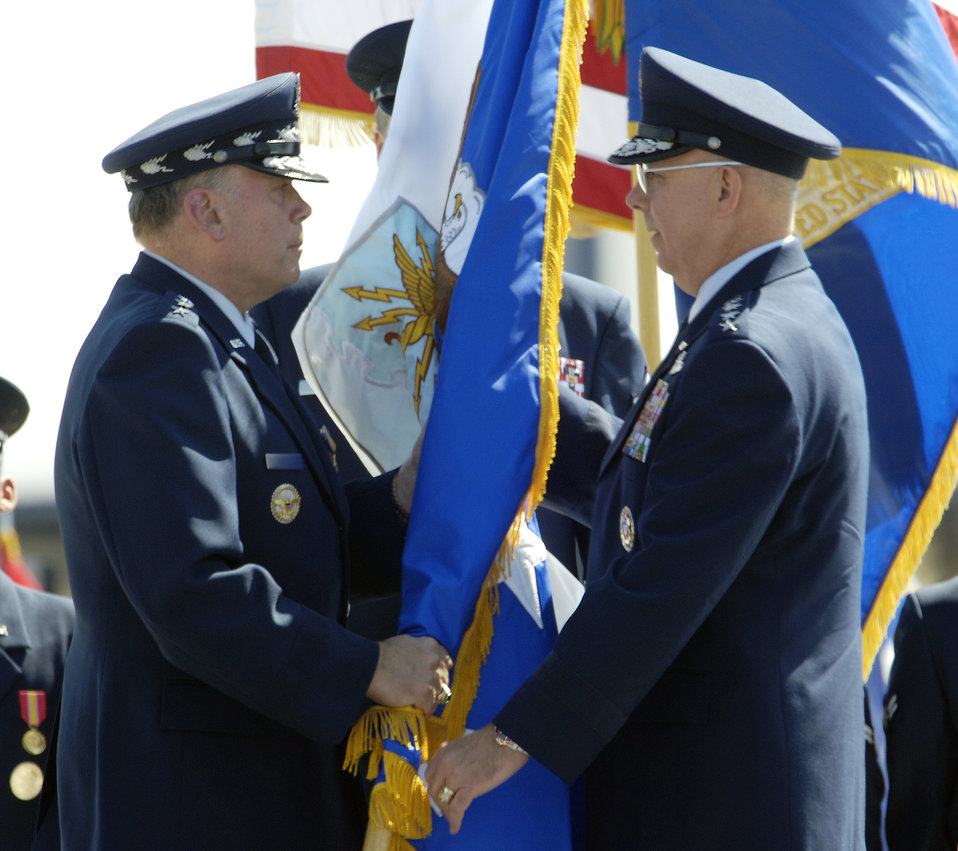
General Moseley swears in as Air Force's 18th chief of staff

ANDREWS AIR FORCE BASE, Md. -- Gen. John P. Jumper (left) passes the Chief of Staff Guidon to Gen. T. Michael Moseley during a ceremony here Sept. 2. General Jumper served in the Air Force for 39 years. General Moseley served as vice chief of staff of the Air Force before being sworn in as the 18th Air Force chief of staff.